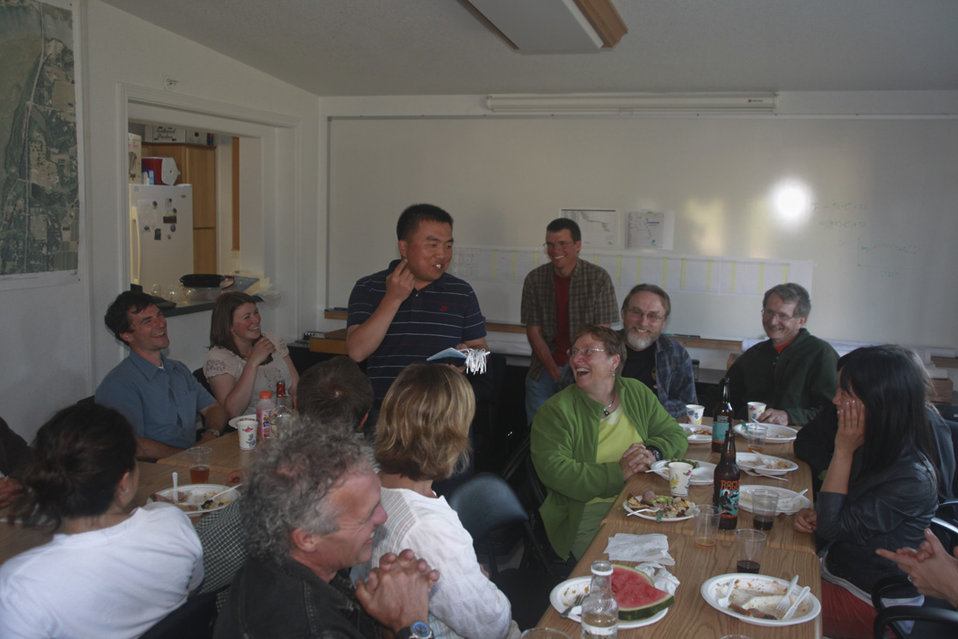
Xu Yingshou Speech